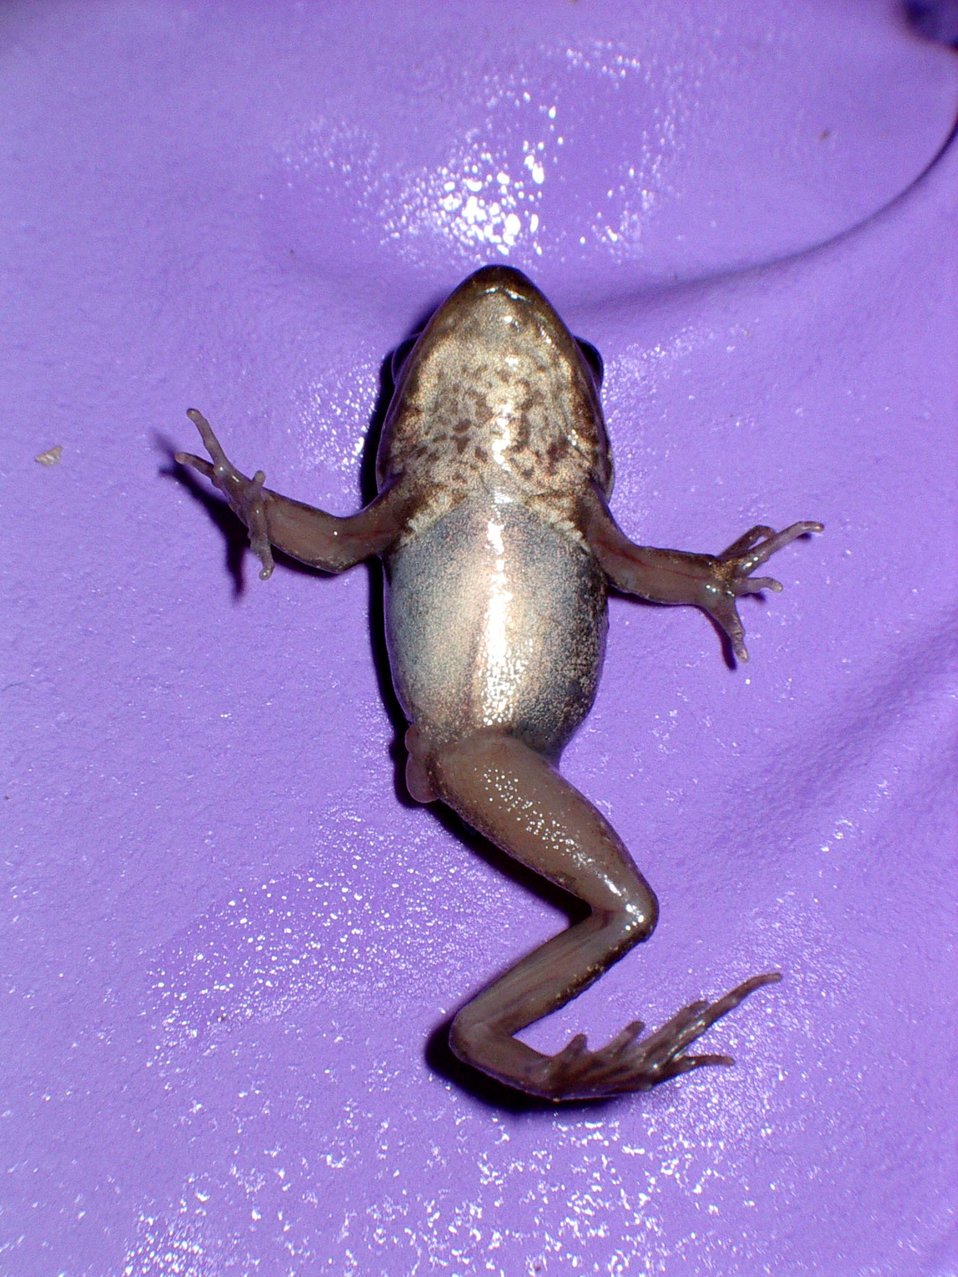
Wood frog with missing limb.

(Mari Reeves/USFWS) Location: Kenai NWR, AK.